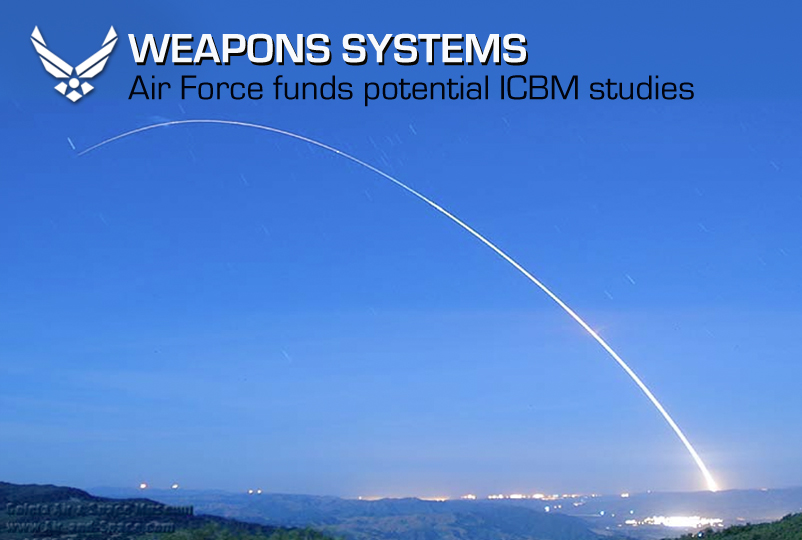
Air Force Funds Potential ICBM Studies